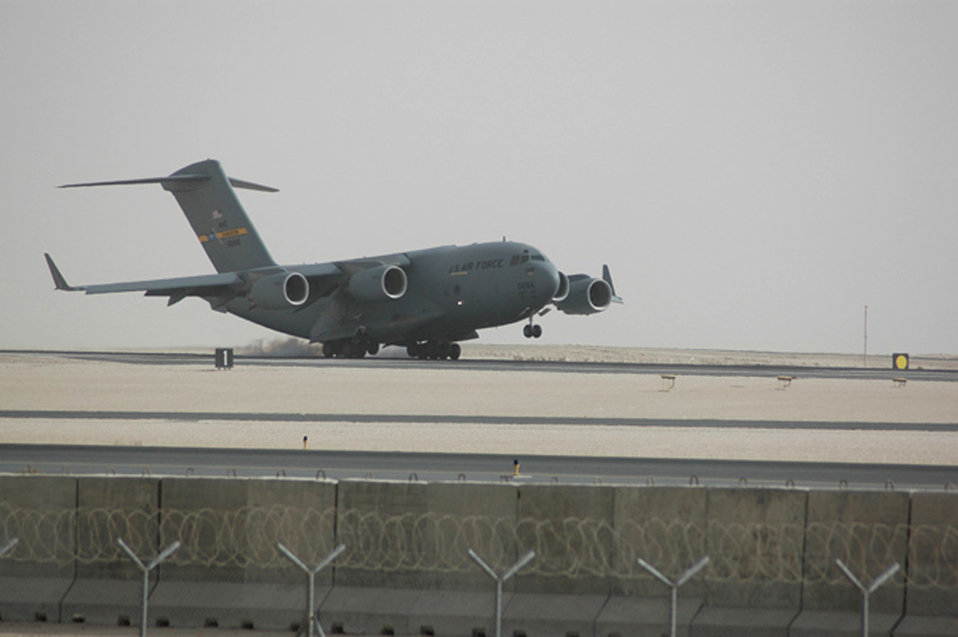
C-17s provide heavy airlift

A C-17 Globemaster III touches down at an air base in Southwest Asia upon returning from a mission. The C-17 performs tactical airlift and airdrop missions, transports passengers, delivers troop resupply and all types of cargo throughout Southwest Asia in support of operations Enduring Freedom and Iraqi Freedom.